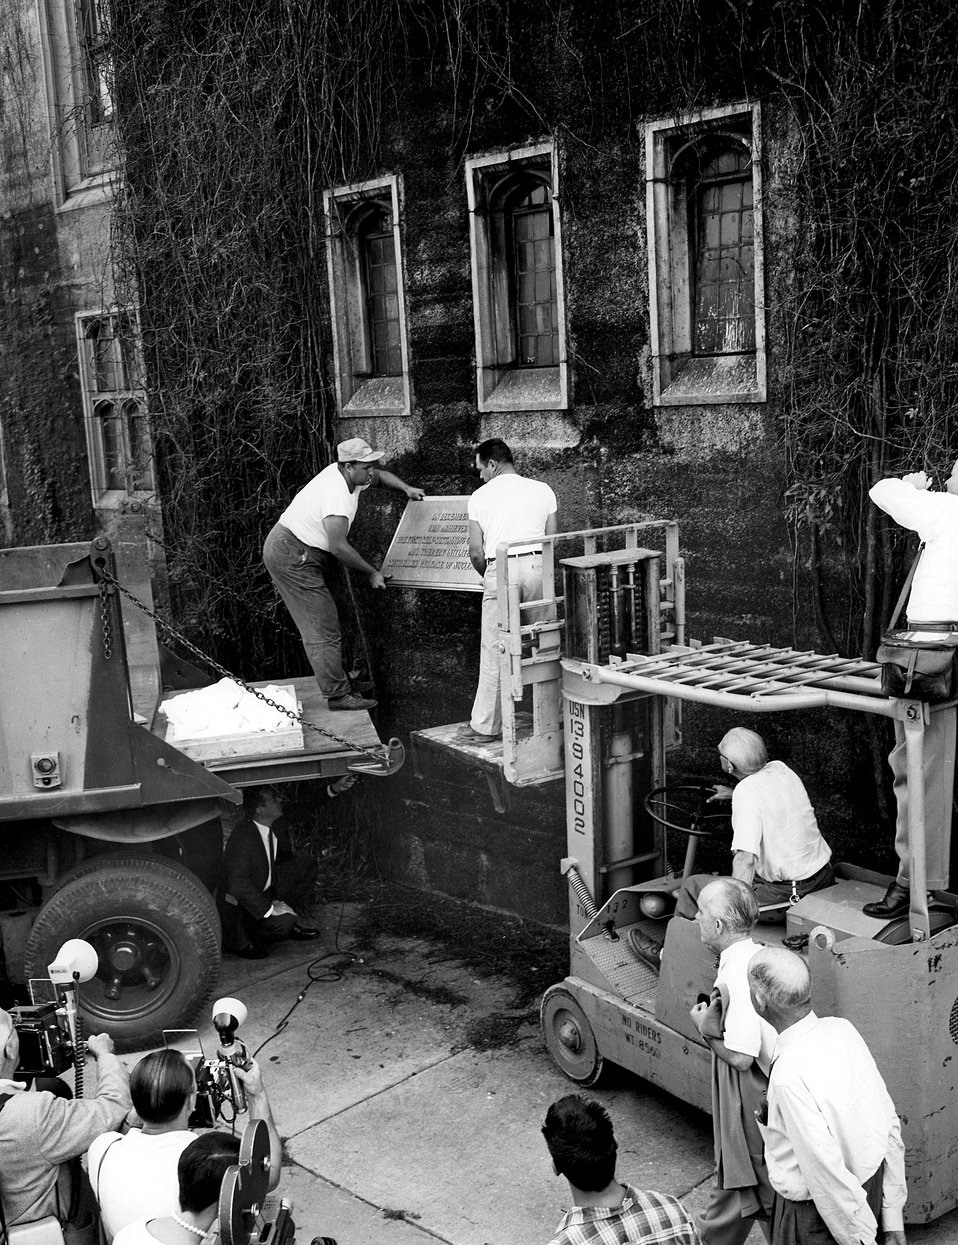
Workmen detach the plaque marking the birthplace of the atomic age, Stagg Field, University of Chicago, as part of the first step in the demolition of the West Stands on August 15, 1957.